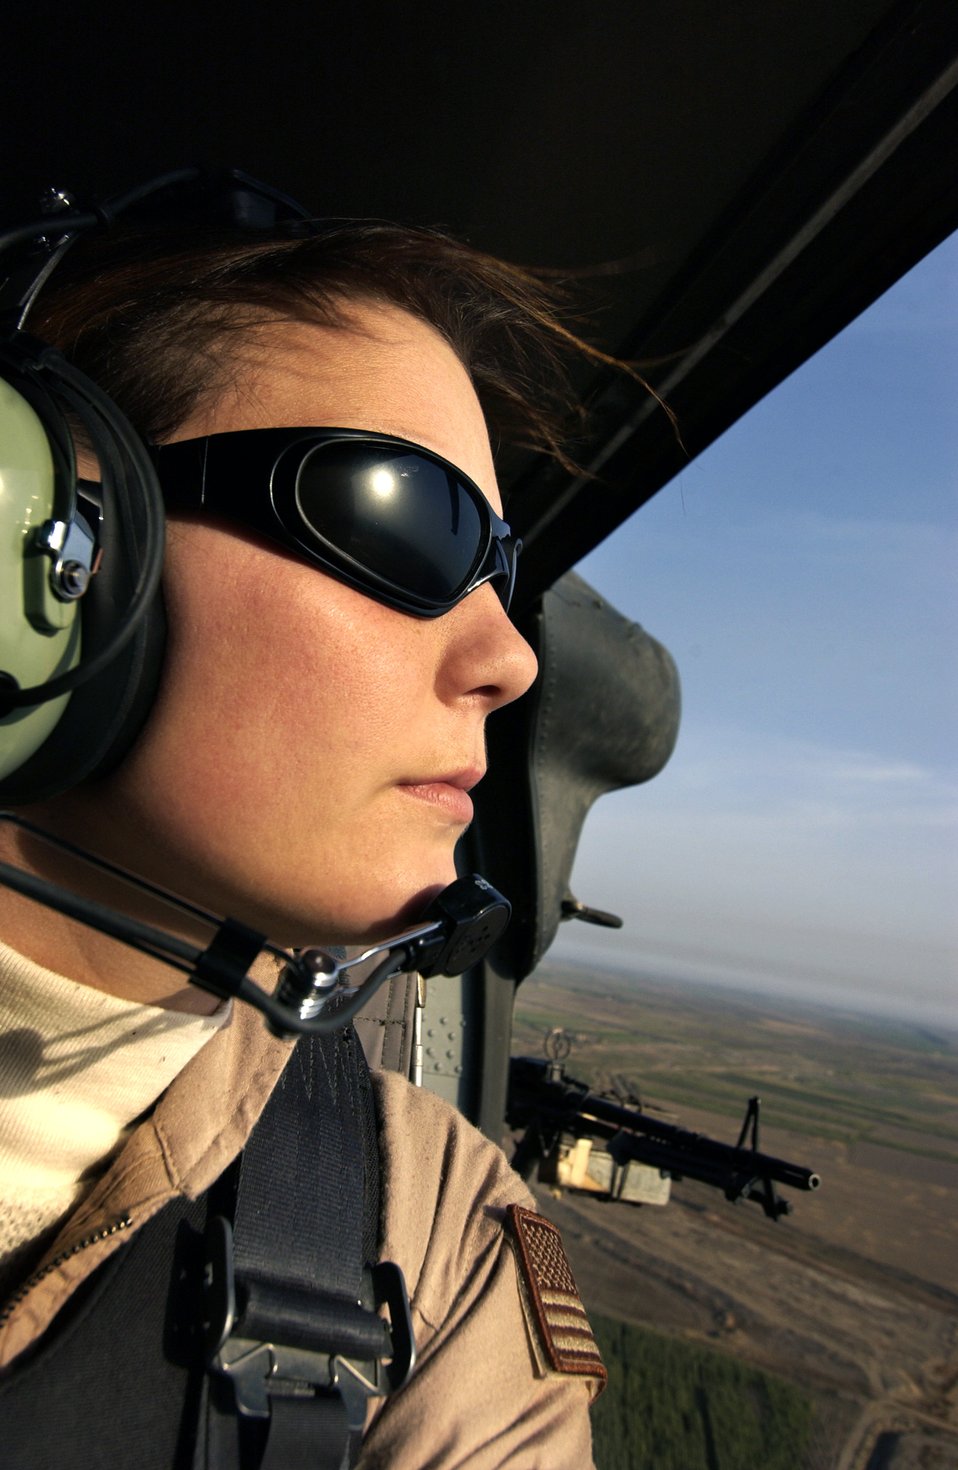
Charleston photojournalist featured on national magazine

Staff Sgt. Stacy Pearsall shot this self-portrait Nov. 11, 2003, while flying over the Iraqi countryside near Babylon. Sergeant Pearsall is an aerial combat photojournalist with the 1st Combat Camera Squadron at Charleston Air Force Base, S.C. She is featured on the cover of the October issue of Pink, a magazine targeting women executives, professionals and business owners, which hits newsstands Sept. 19.